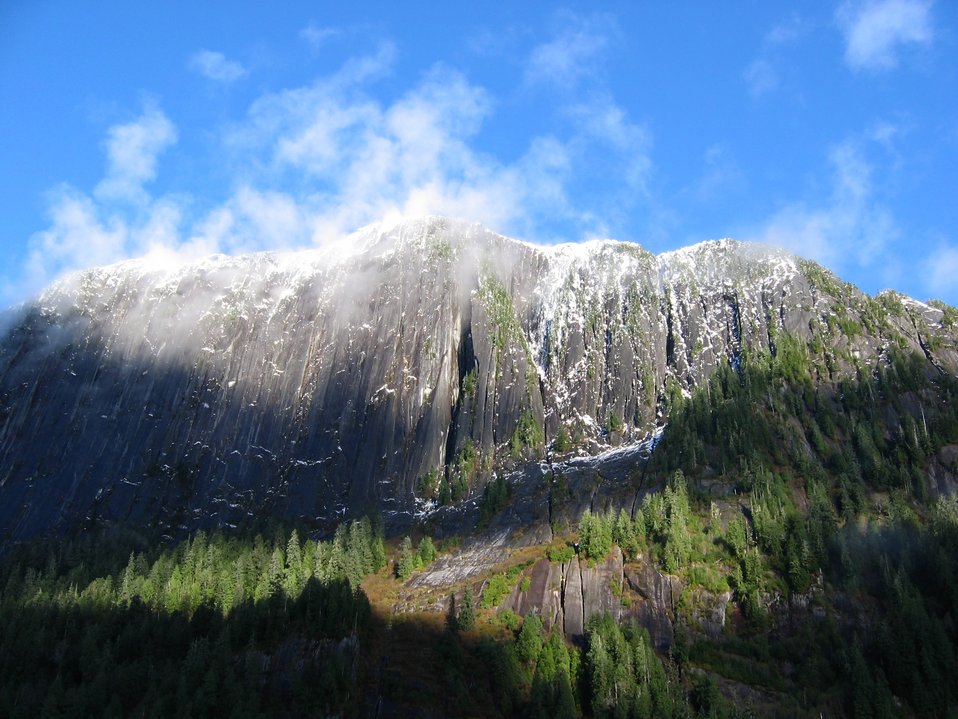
Sprinkles of snow dot precipitous cliffs.